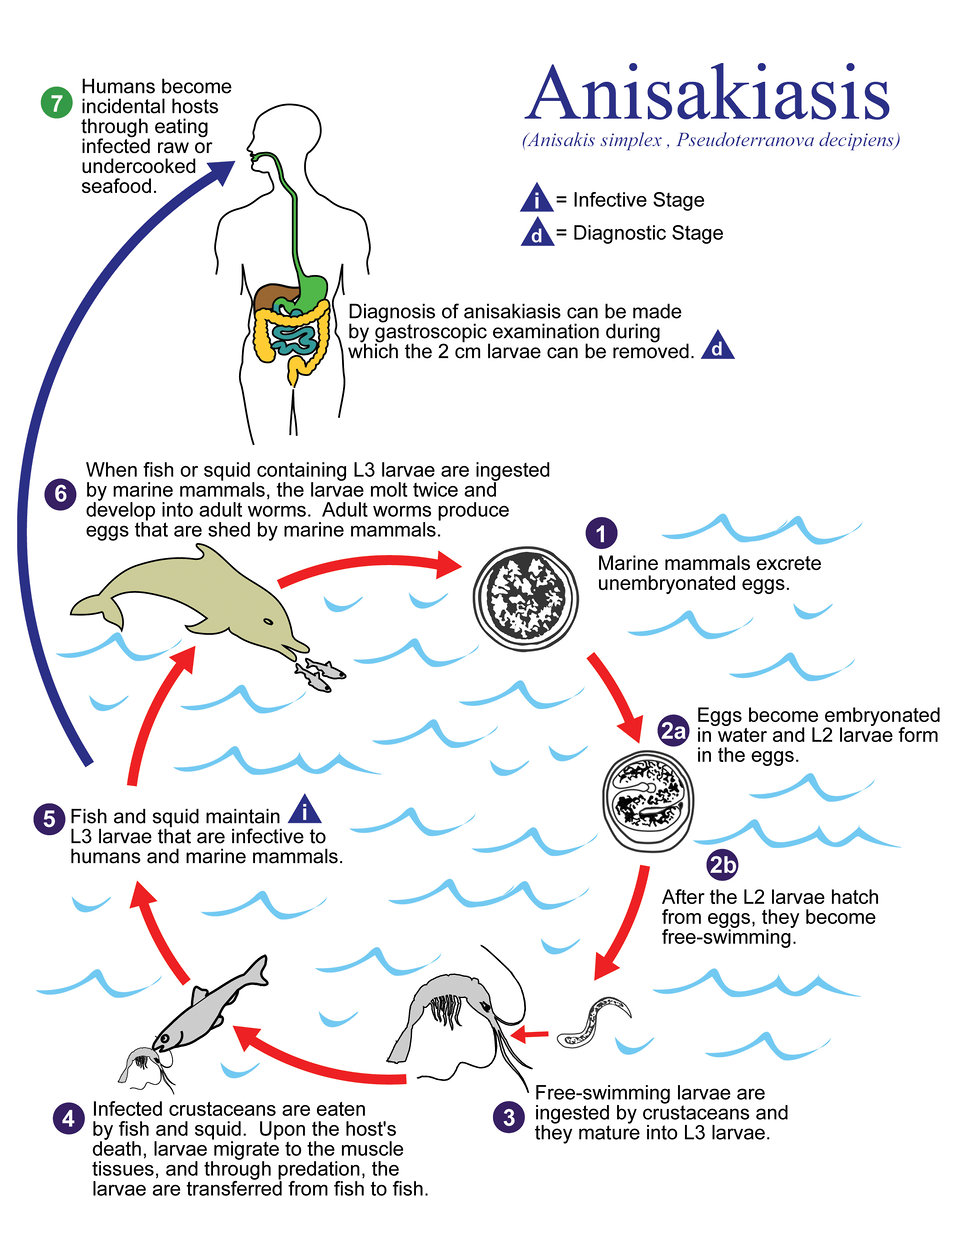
This illustration depicts the life cycle of A. simplex and P. decipiens, the causal agents of Anisakiasis.